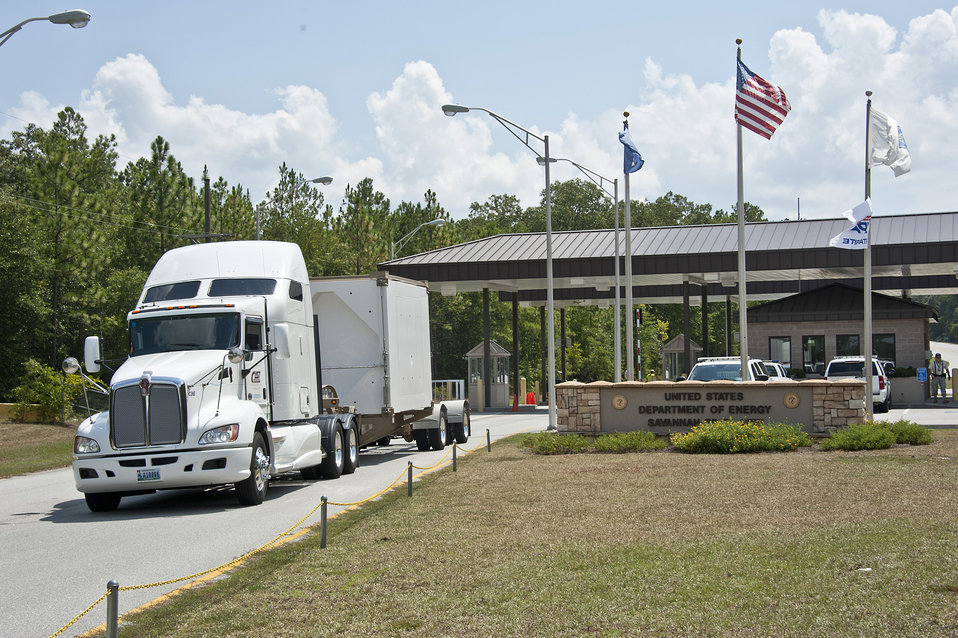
First TRUPACT-III shipment from Savannah River

The first TRUPACT-III shipment leaves the Savannah River Site, headed for WIPP in New Mexico for permanent disposal.